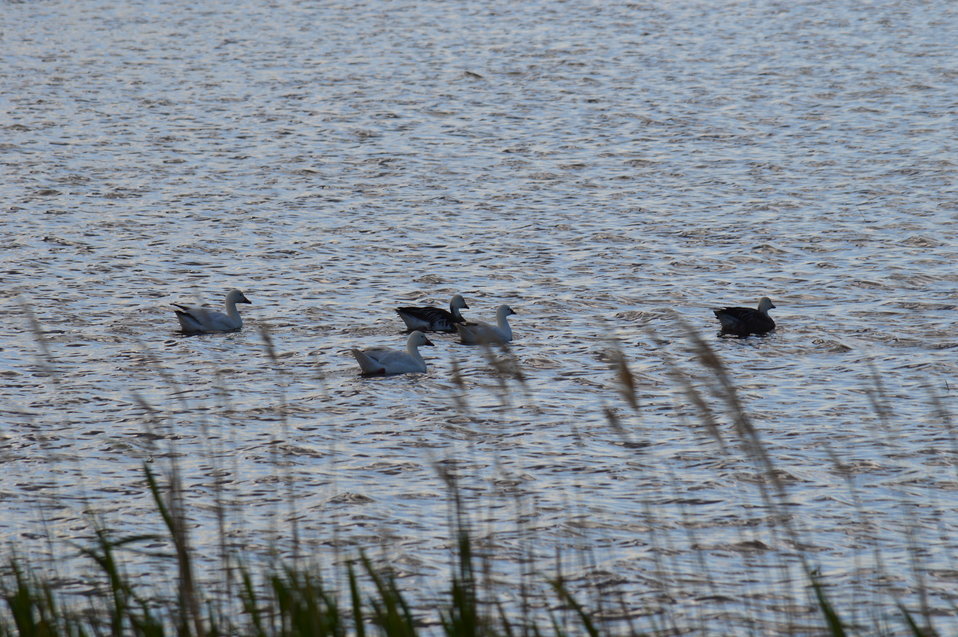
Flock of Snow Geese in Sand Lake

Scenery and wildlife at Sand Lake National Wildlife Refuge in South Dakota